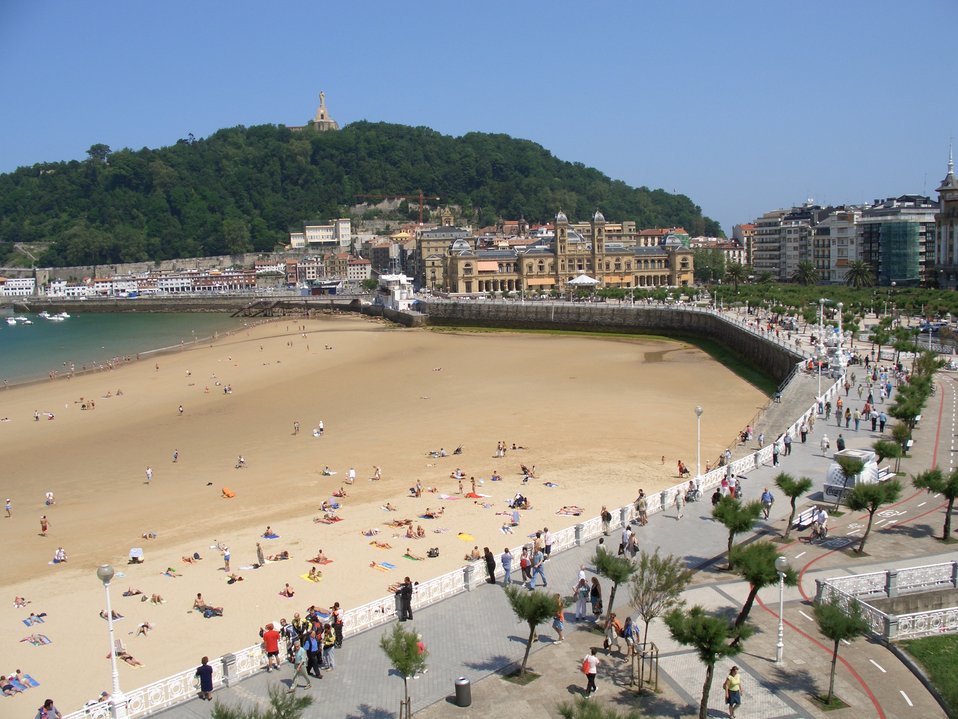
Deutsch: San Sebastian